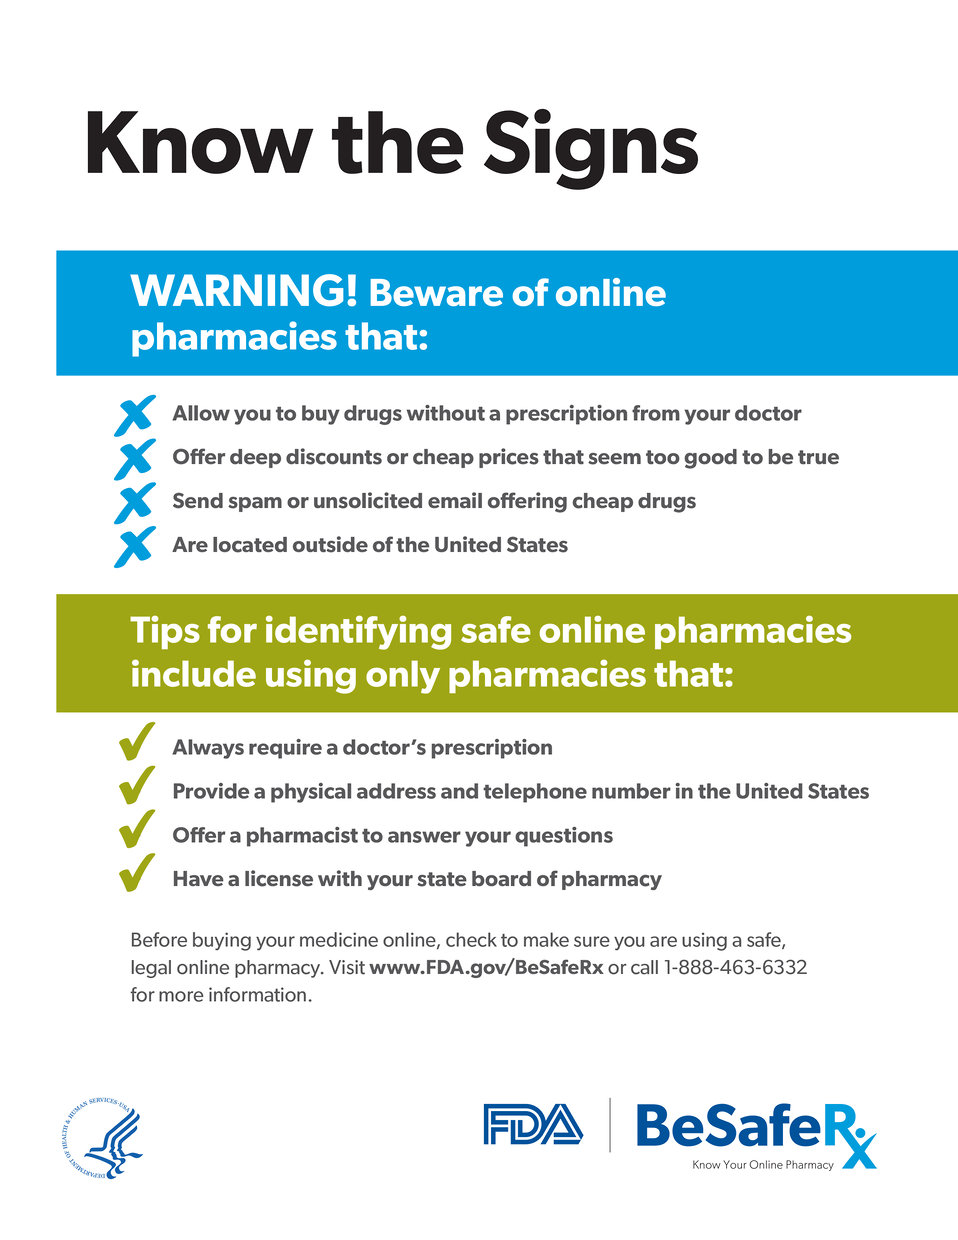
BeSafeRx Know the Signs

A high quality PDF of this public service announcement is available at: BeSafeRx Campaign Materials

This is your one-stop resource for all materials associated with the FDA BeSafeRx campaign. FDA developed these materials to educate consumers about the risks associated with fake online pharmacies and how to safely purchase prescription medicine online. Put them to work for you!